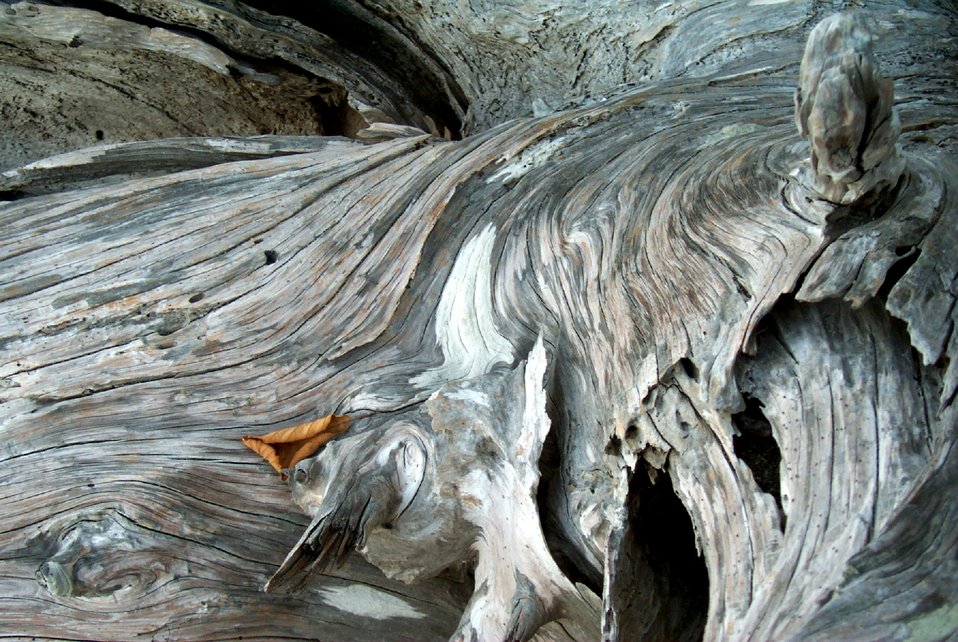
Driftwood at Gig Harbor.